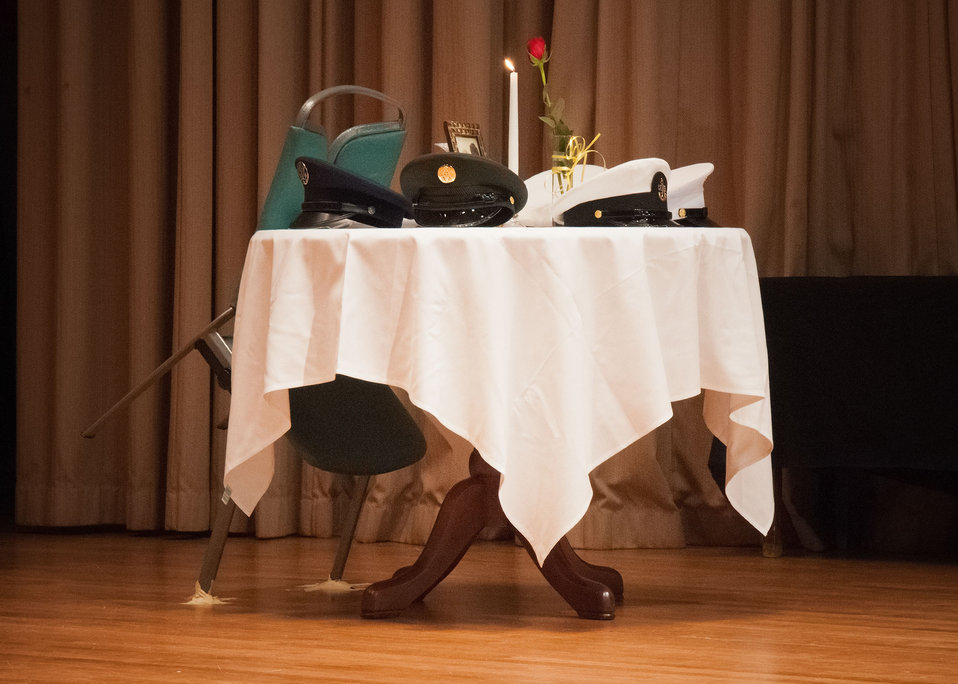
The POW/MIA Table at the U.S. Department of Agriculture's Veterans Day Observance: Honoring All Who Served Wednesday, Nov. 7, 2012 in Washington, D.C. The POW/MIA Ceremony is an opportunity to remember those gallant individuals who fought and died for our country and paid an incredible price to help preserve the freedoms we enjoy today.